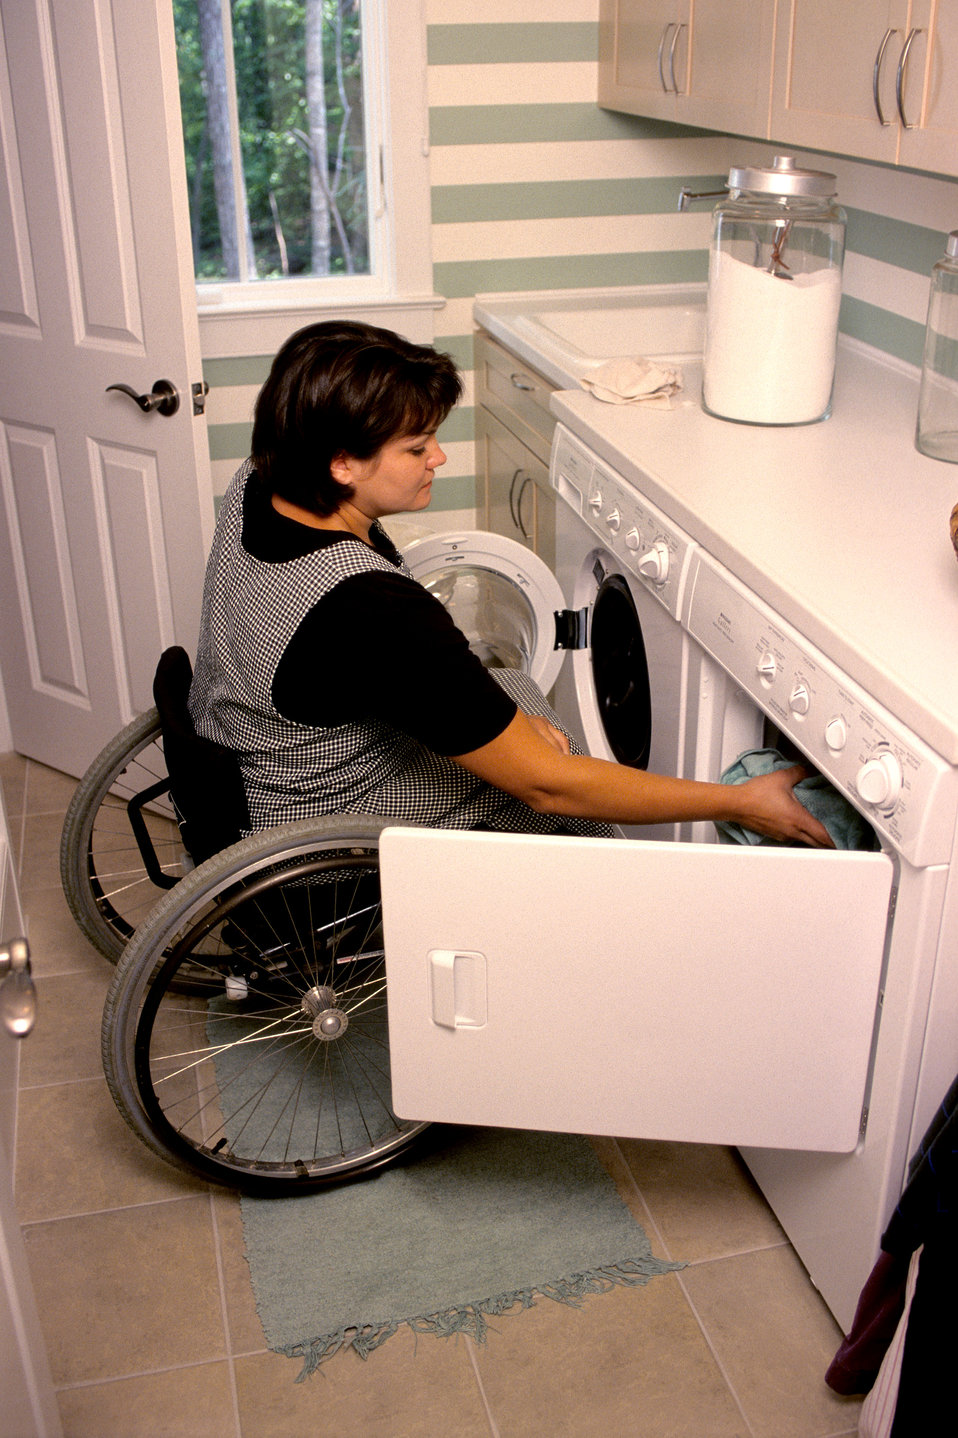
This 2000 image depicted a woman seated in her wheelchair, while she was manipulating the controls of a front-loading clothes dryer, which was located directly adjacent to a front-loading washing machine from which she'd just extracted the damp laundry load. Front-loading washers and dryers are easier to access, for a wider range of users than their top-loading versions. Many people who use wheelchairs, and have trouble bending over, or reaching, or are of short stature such as children, find that front-loading washers and dryers are easier to access. For some people, top loading machines are impossible to use, for one must reach over, and down into these appliances. In this four-image example (see PHIL 9388, 9389, 9390, and 9391), a child, an older adult, and a person using a wheelchair were all shown as benefiting from using the front-loading feature of this washer and dryer. Raised on a pedestal, they become even easier to use for many.